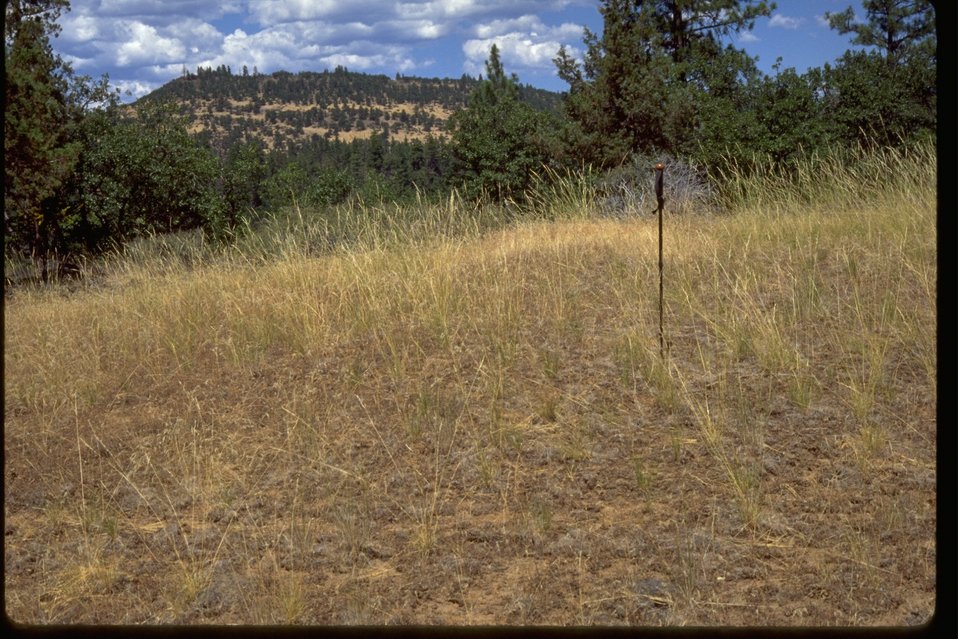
Agate Flats.